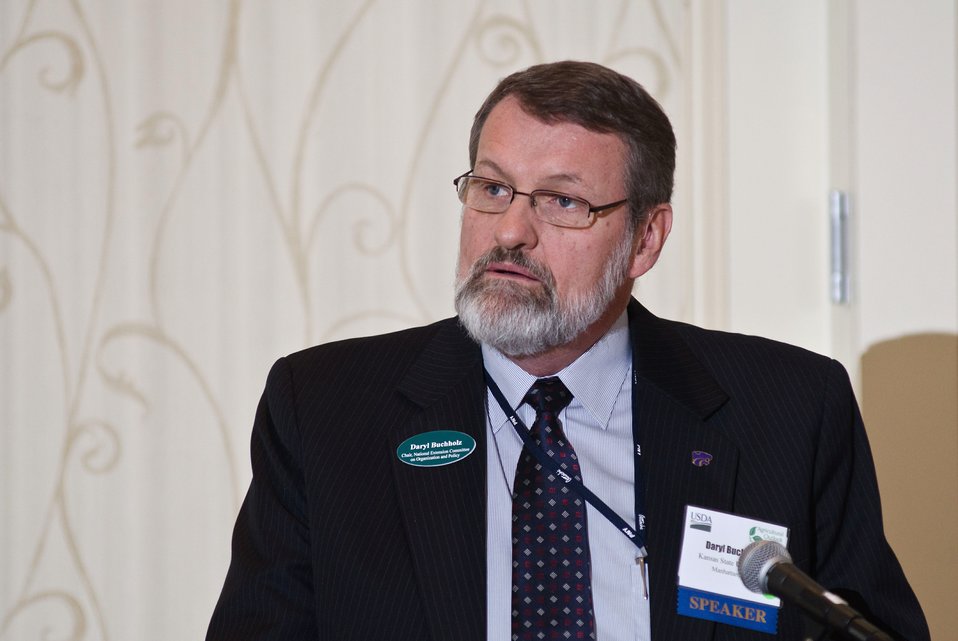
National Extension Committee on Organization and Policy Chair Daryl Bucholtz spoke during the 2013 Agricultural Outlook Forum, held at the Crystal Gateway Marriott Hotel, Arlington, Virginia on Thursday, Feb. 21, 2013. This annual Forum brings together producers, policymakers, business, government, and industry leaders to meet, exchange ideas, and discuss timely agriculture issues.